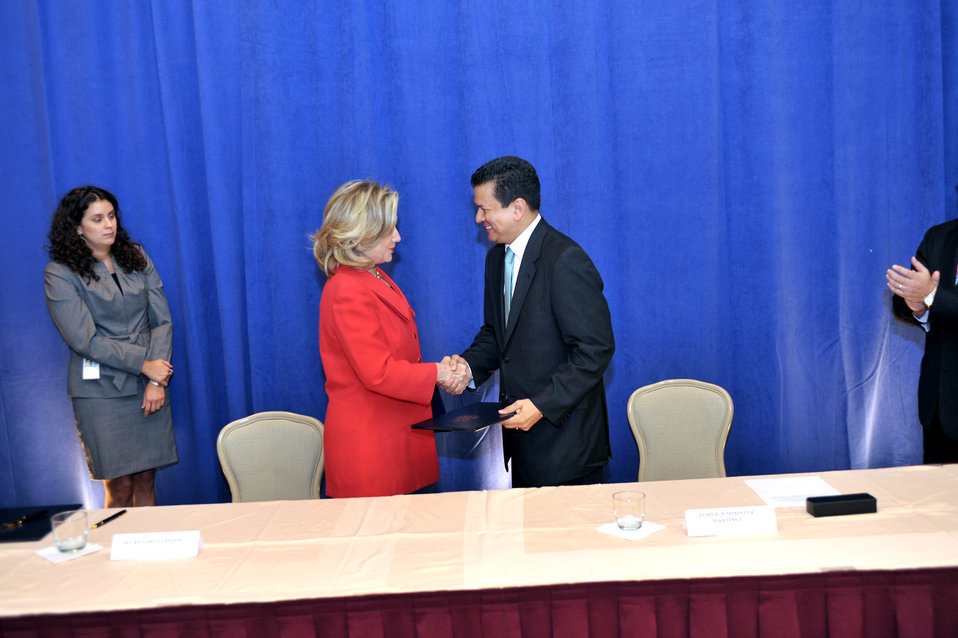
Secretary Clinton Shakes Hands With Salvadoran Prime Minister Martinez

U.S. Secretary of State Hillary Rodham Clinton shakes hands with El Salvador Prime Minister Martinez after signing a memorandum of understanding for the Building Remittance Investment for Development Growth and Entrepreneurship (BRIDGE) Initiative with Honduras and El Salvador iat the Hemsley Hotel in New York, New York, on September 22, 2010.